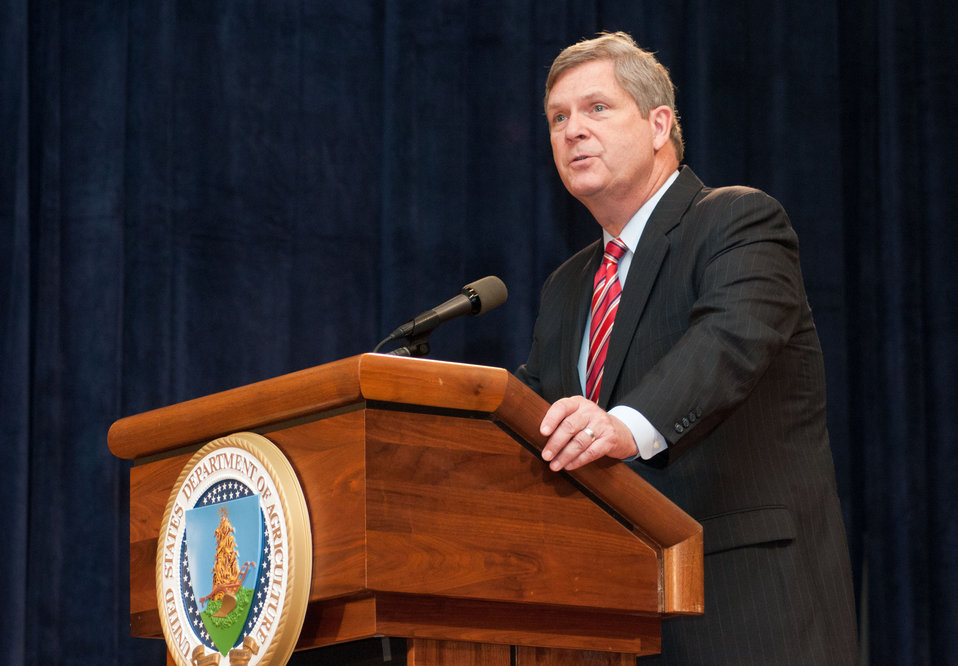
U.S. Department of Agriculture (USDA) Secretary Tom Vilsack made opening remarks during the Lesbian, Gay, Bisexual and Transgender (LGBT) Pride Observance Program, on Thursday, June 2, 2011 in the Jefferson Auditorium, Washington, DC.